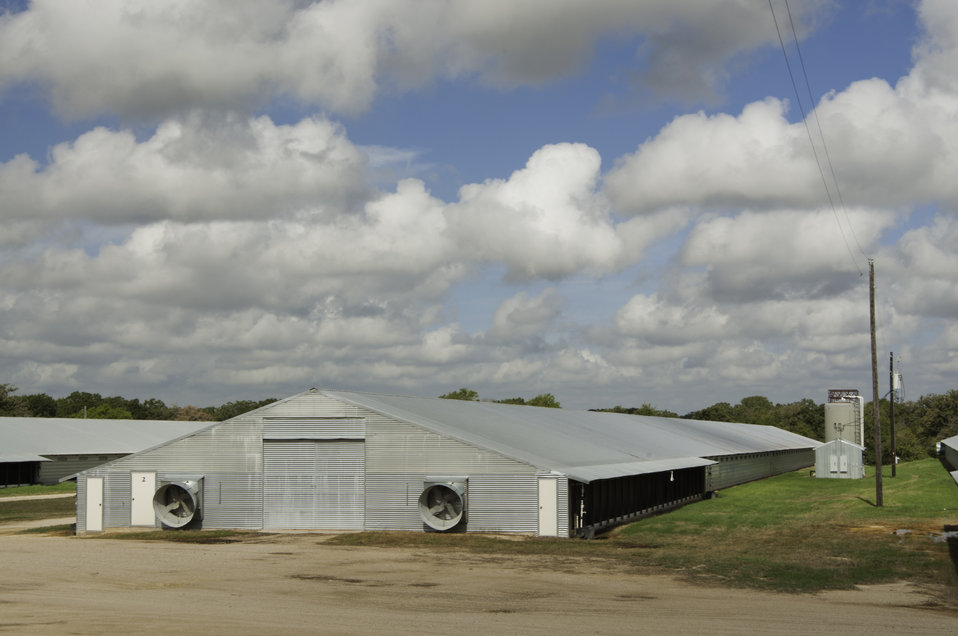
A poultry house sits in the sun on the Bobby Morgan Poultry Farm Luling, TX on Aug. 23, 2013.